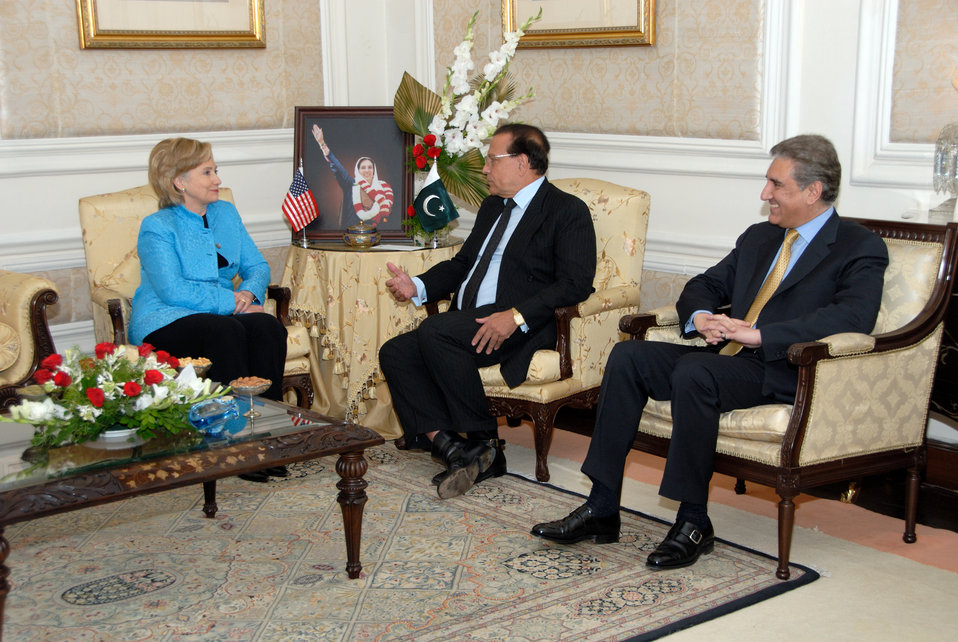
Secretary Clinton Meets With Punjab Governor

U.S. Secretary of State Hillary Rodham Clinton meets with Punjab Governor Salmaan Taseer at the Governor House in Lahore, Pakistan October 29, 2009. Pakistani Foreign Minister Shah Mahmood Qureshi also attended the meeting.